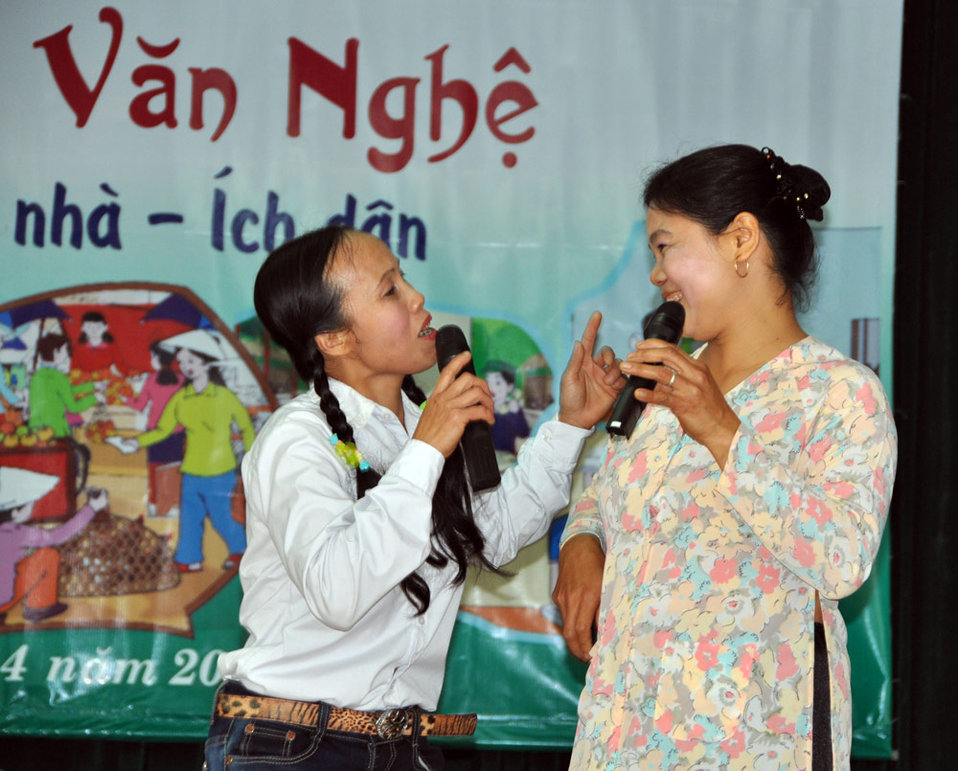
Residents in Vietnam's Tien Ngoai Commune, Duy Tien District, Ha Nam Province, discuss ways to prevent and control avian and pandemic influenza.